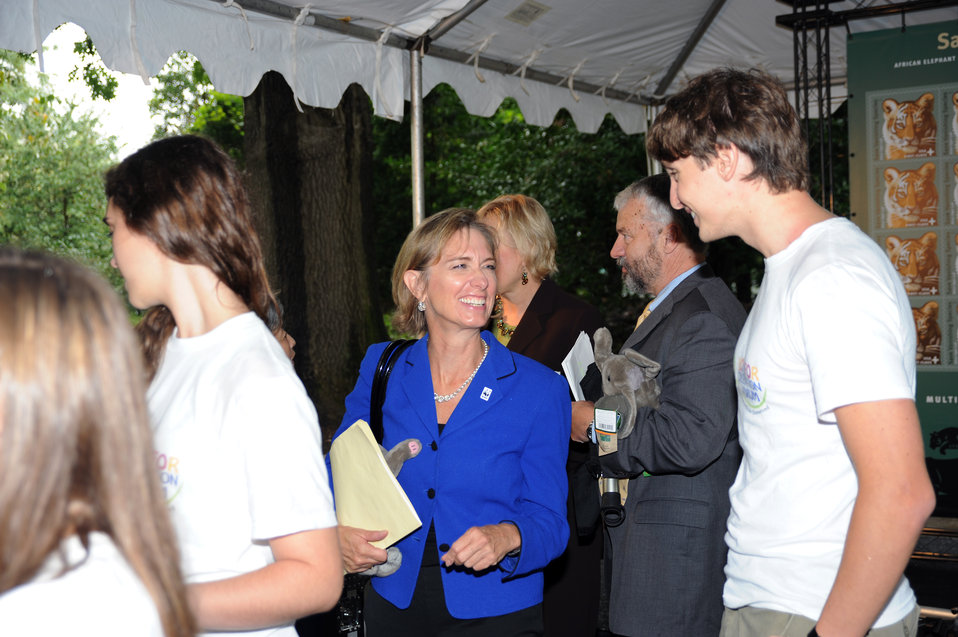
Save Vanishing Species Stamp First Day of Issue